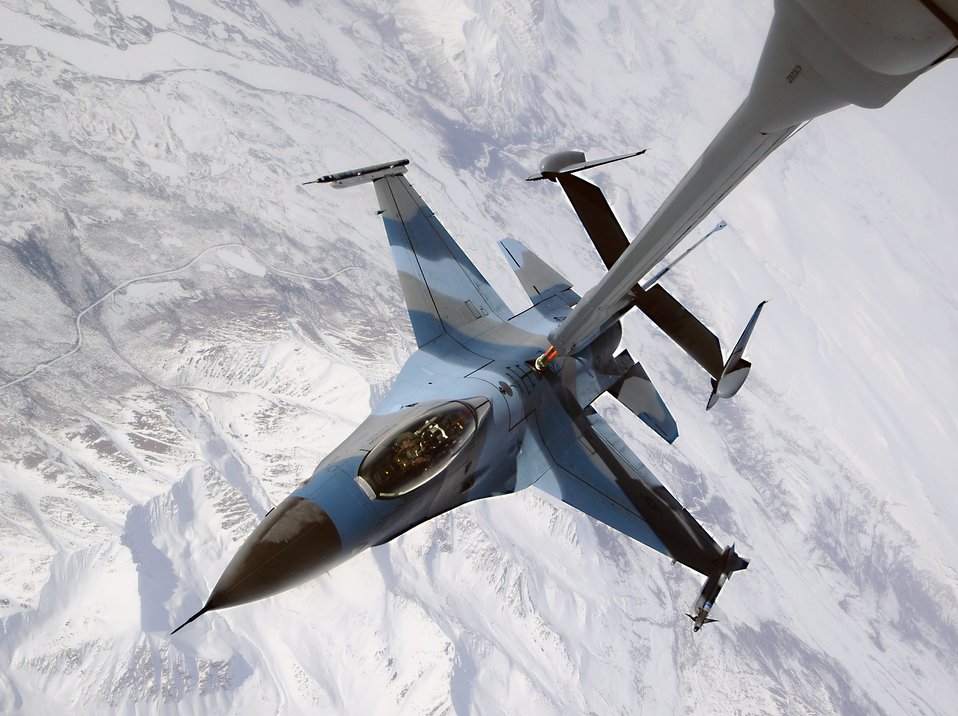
Ready for Round 2

An F-16 Fighting Falcon showing the aggressor paint scheme disconnects from a KC-10 Extender after being refueled during a Red Flag-Alaska exercise April 22 and is ready to re-engage the friendly forces. The F-16 is from the 18th Aggressor Squadron at Eielson Air Force Base, Alaska.